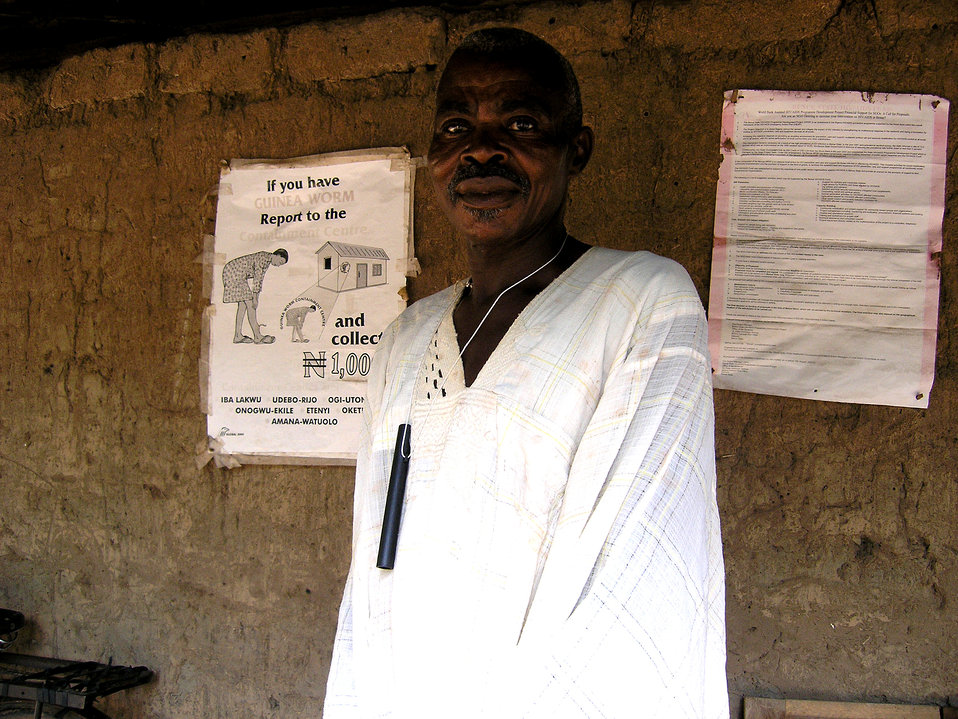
This 2004 photograph depicts a Nigerian man inside a Guinea worm containment center, wearing a pipe filter around his neck through which he can drink pond water without risk of Guinea worm, Dracunculus medinensis, infection. Often, young men, usually farmers and cattle herders, find themselves at greater risk for disease because they are away for weeks from the community base where household filtered water should be available. Instead they drink from numerous unprotected water sources while working in the field. The pipe filter acts as a portable straw that can filter the copepods (water fleas) that carry the parasitic larvae of the Guinea worm. Case containment centers not only provide free treatment to Guinea worm patients who voluntarily come for therapy, but educate the sufferers as to how to avoid the infection.